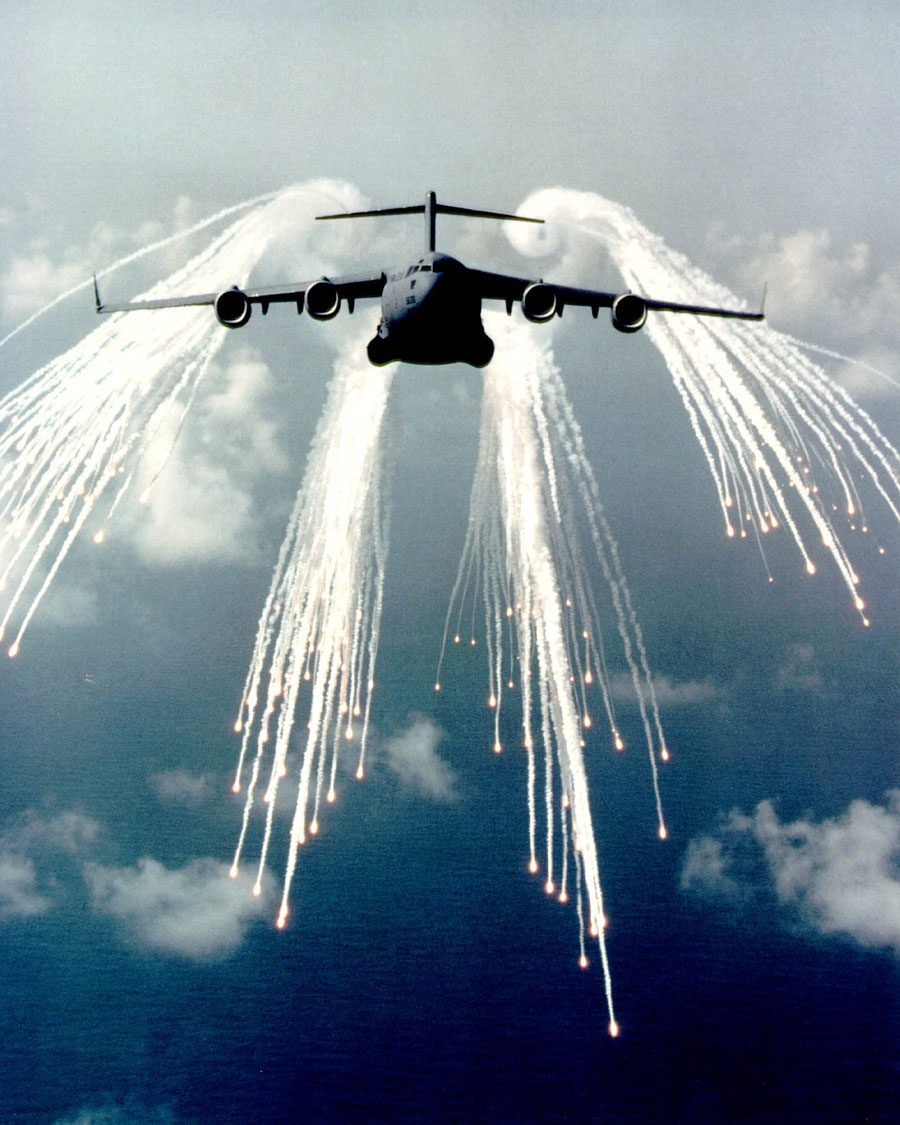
C-17

FILE PHOTO -- The C-17 Globemaster III is the newest, most flexible cargo aircraft to enter the airlift force. The C-17 is capable of rapid strategic delivery of troops and all types of cargo to main operating bases or directly to forward bases in the deployment area. The aircraft is also able to perform tactical airlift and airdrop missions when required. The inherent flexibility and performance characteristics of the C-17 force improve the ability of the total airlift system to fulfill the worldwide air mobility requirements of the United States. The ultimate measure of airlift effectiveness is the ability to rapidly project and sustain an effective combat force close to a potential battle area. Threats to U.S. interests have changed in recent years, and the size and weight of U.S.-mechanized firepower and equipment have grown in response to improved capabilities of potential adversaries. This trend has significantly increased air mobility requirements, particularly in the area of large or heavy outsize cargo. As a result, newer and more flexible airlift aircraft are needed to meet potential armed contingencies, peacekeeping or humanitarian missions worldwide. The C-17 was designed and built with this new world order in mind.